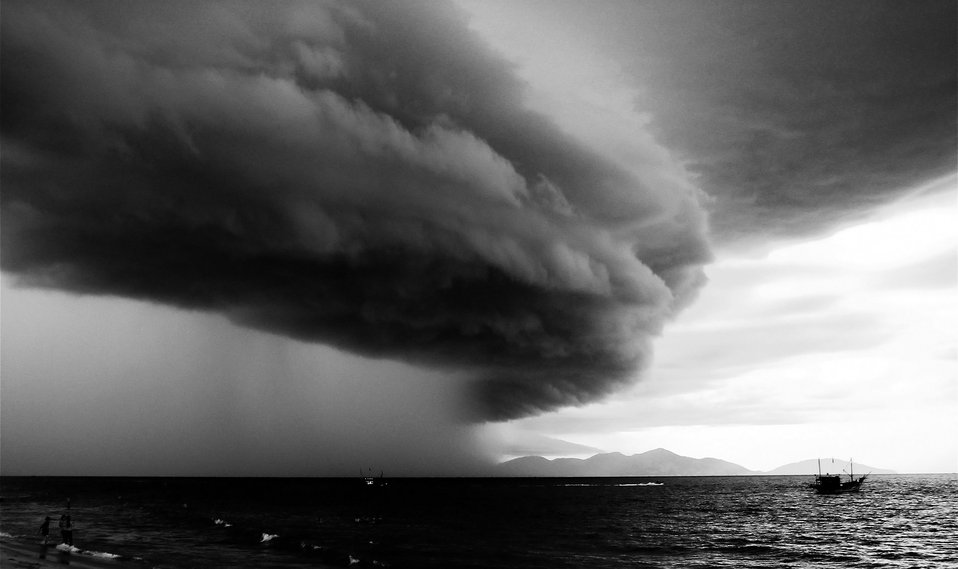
Angry natural

A thunderstorm at cua dai beach, hoi an town, quang nam province, central of vietnam..